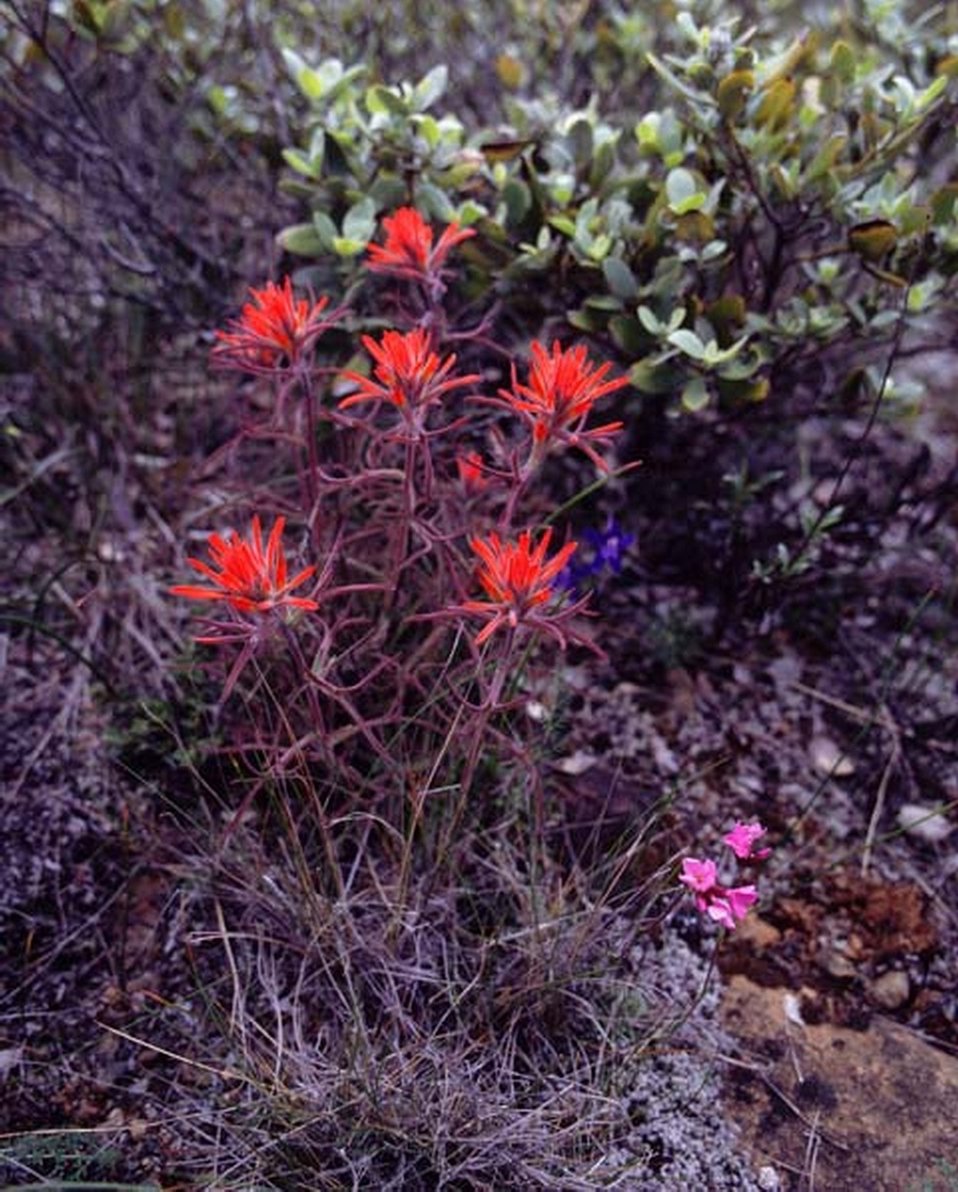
Medium shot of Indian Paintbrush wildflowers.